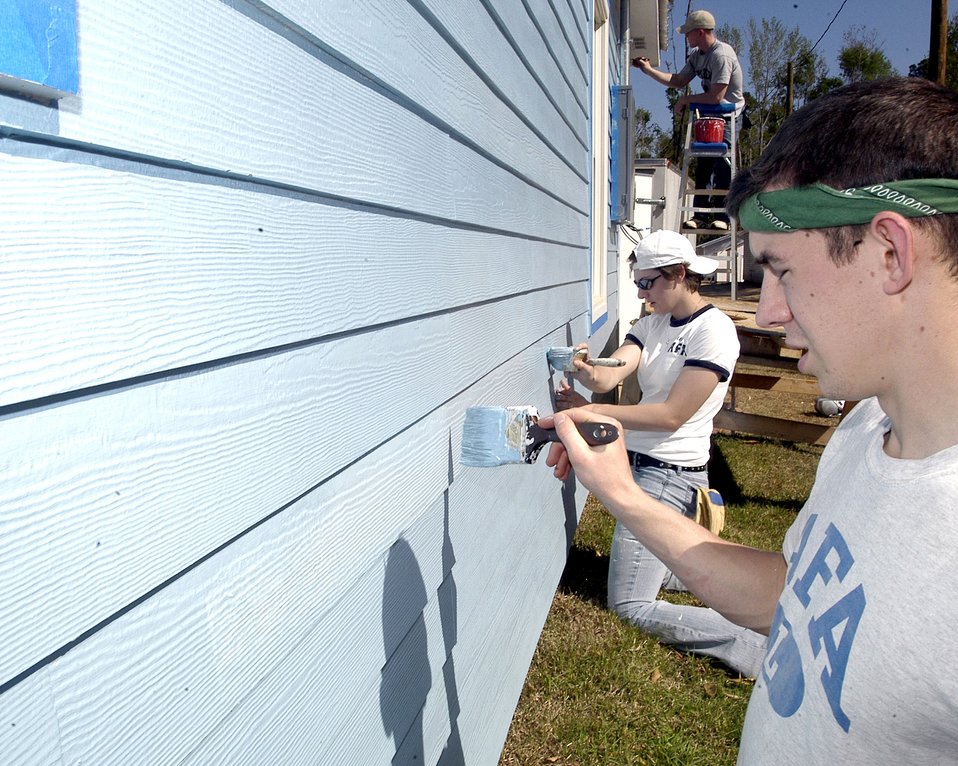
Alternate Spring Break 2006

Cadet 3rd Class Cory Pilinko and Cadet 4th Class Ariana Allen from the Air Force Academy work with Habitat for Humanity in Covington, La., to finish painting a newly constructed house, Monday, March 27, 2006. Approximately 140 cadets volunteered their spring break to help rebuild the disaster-struck area in Biloxi, Miss., and surrounding cities.